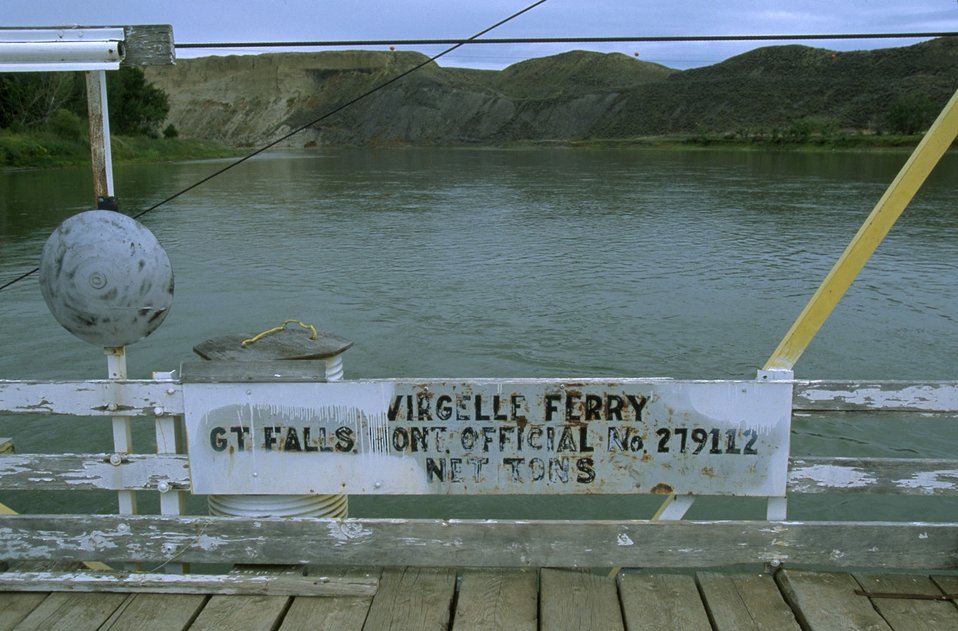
Stafford Ferry across the Upper Missouri River